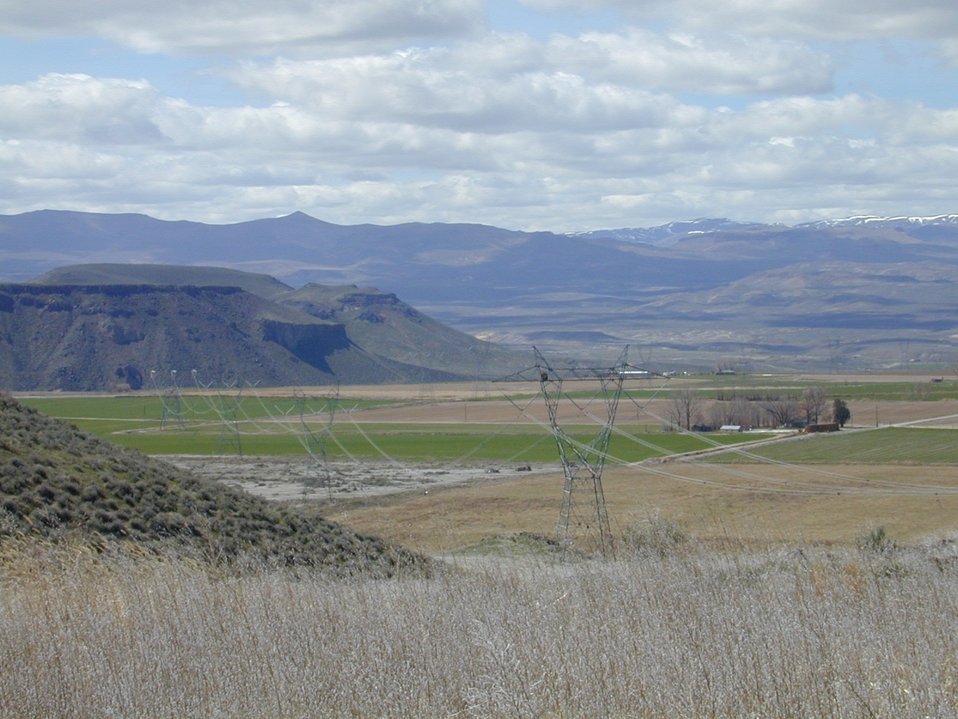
Snake River Birds of Prey National Conservation Area Lower Snake River District LSRD Snake River Canyon Scenic